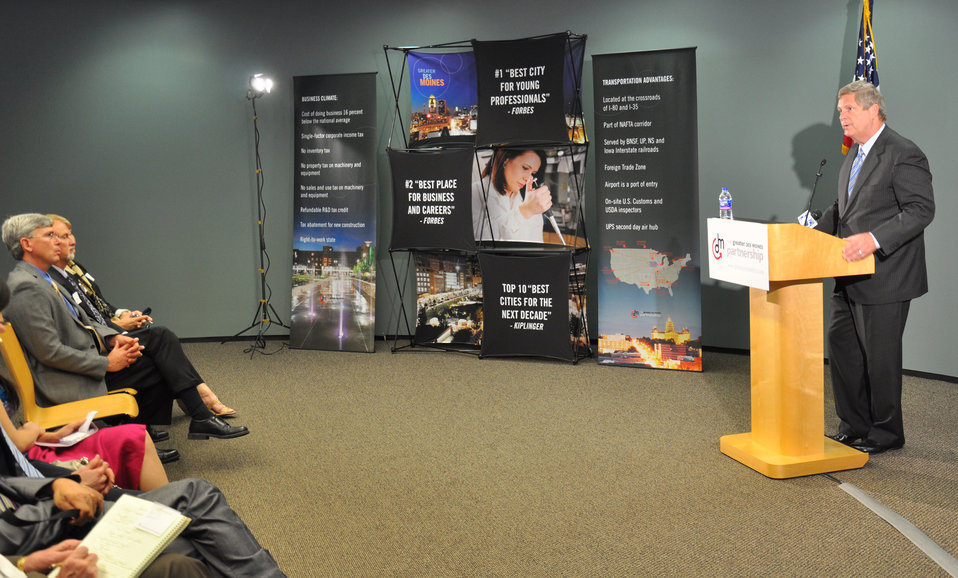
Agriculture Secretary Tom Vilsack meeting with business and community leaders in Des Moines, Iowa, on Tuesday, June 12, 2012 discussed how the continuing demand for American food and agricultural products abroad has led to the three best consecutive years for U.S. farm exports in our nation's history.

Vilsack also highlighted a report released this week by the White House Rural Council and the U.S. Department of Agriculture which notes progress that has been made in the agricultural economy and details steps the Obama Administration has taken to help strengthen the farm economy and support jobs in rural America.